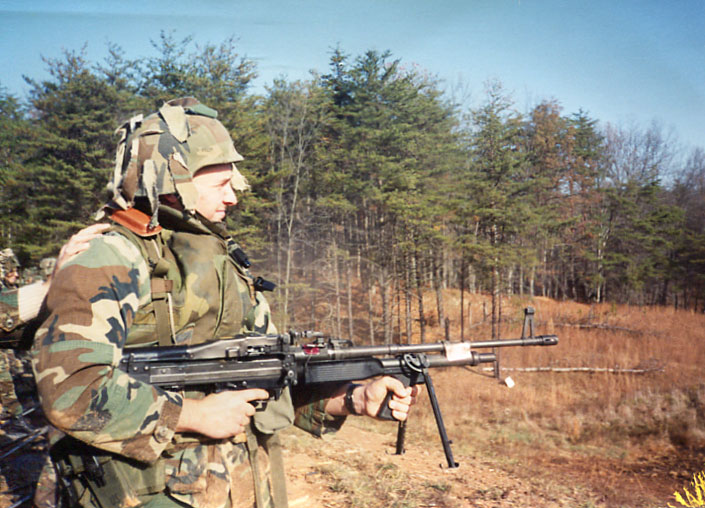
K.A. Toomey -- NCTC

K.A. Toomey is a Special Agent in Charge at the National Conservation Training Center and was with the Marine Corps.